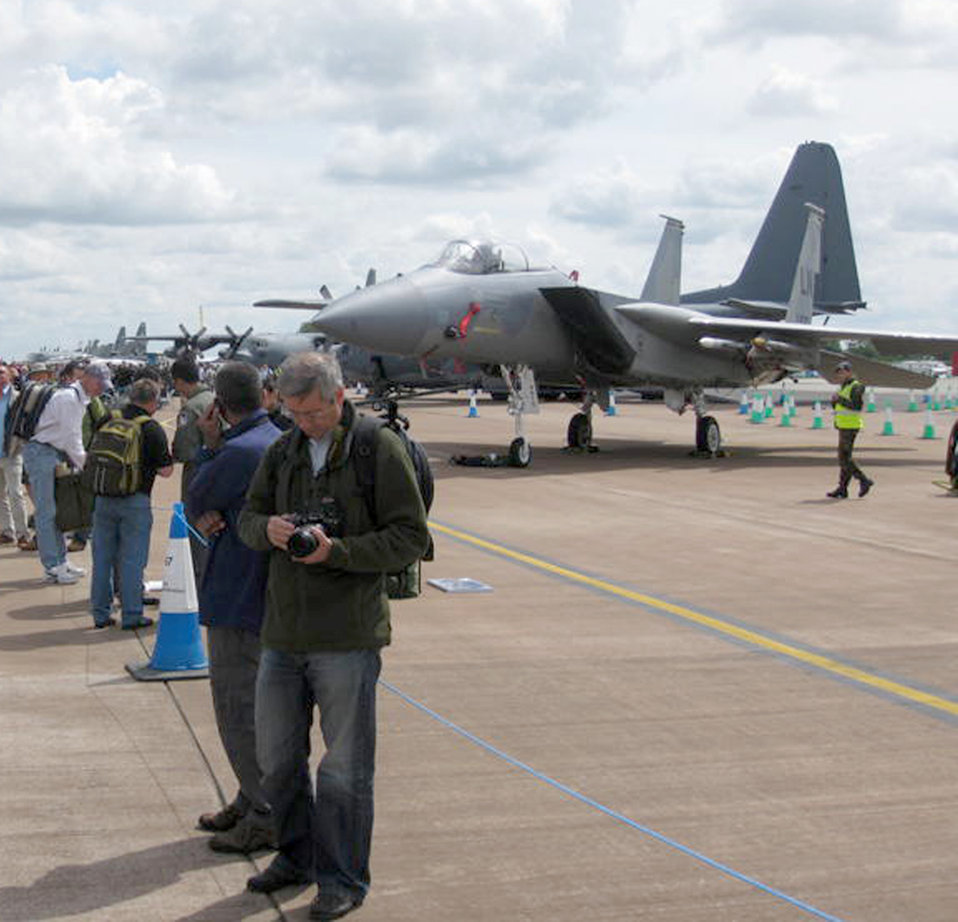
'Royal International Air Tattoo'

Visitors of the Royal International Air Tattoo walk by an F-15 Eagle, July 17, 2010, at Royal Air Force Fairford, England. The Eagle is based out of Royal Air Force Lakenheath, England.